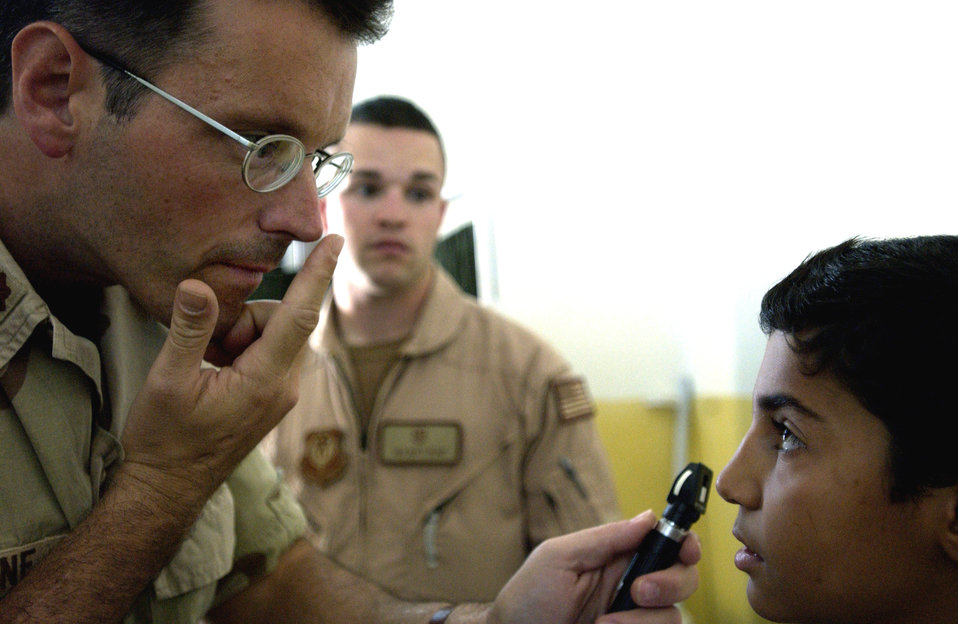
Medical visit

FRENCH VILLAGE, Iraq -- Maj. (Dr.) Gene Delaune examines a young Iraqi patient Oct. 18 in the new clinic here near Baghdad International Airport. Delaune and several other American medical professionals volunteered to treat patients on the not-for-profit clinic's opening day. Delaune is an individual mobilization augmentee deployed from the 89th Medical Group at Andrews Air Force Base, Md.